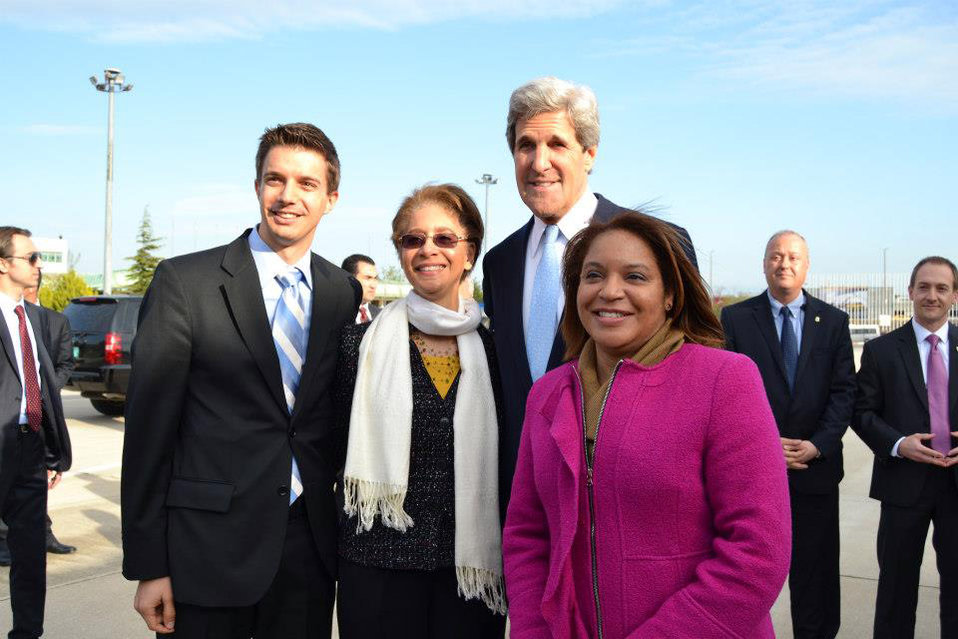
Secretary With Consulate General Istanbul Staff Members

U.S. Secretary of State John Kerry with U.S. Consulate General staff members before his departure at Atatürk Airport, Istanbul, Turkey, April 21, 2013.